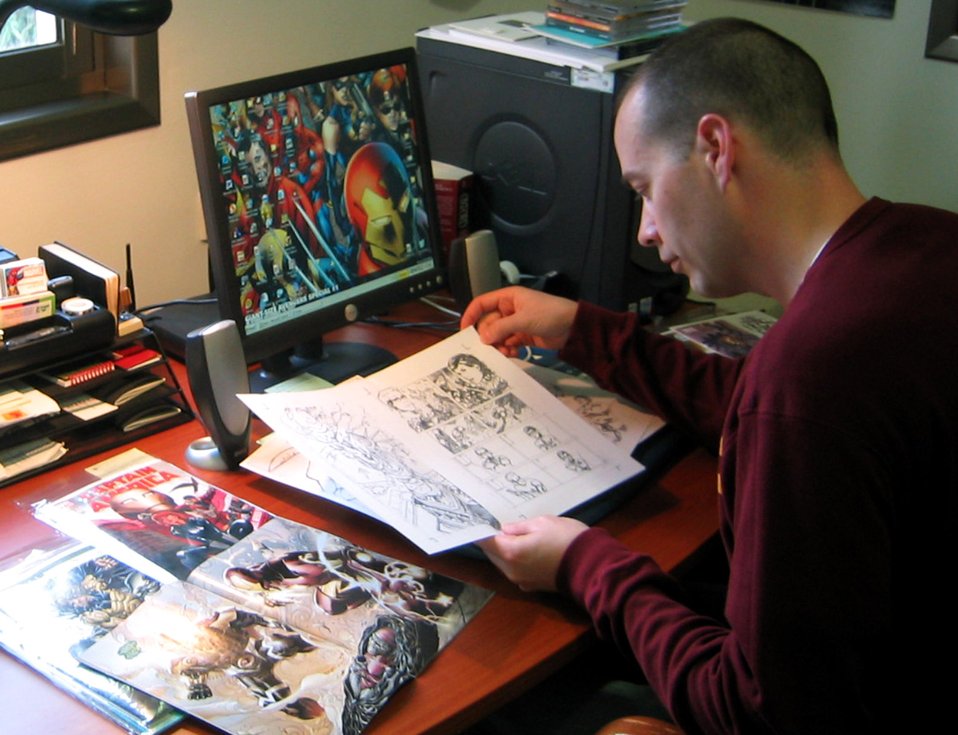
Major writes for comic book

Major Matt Yocum reviews artwork for Marvel Comics' 'Giant-Size Avengers Special #1,' which will feature a story he wrote. The major, the assistant air attache at the U.S. Embassy in Tel Aviv, Israel, fell in love with comics at age 10 and said he never dreamed he'd one day be writing stories about Spider-Man and other superheroes. The issue with Major Yocum's story will be released Dec. 26.